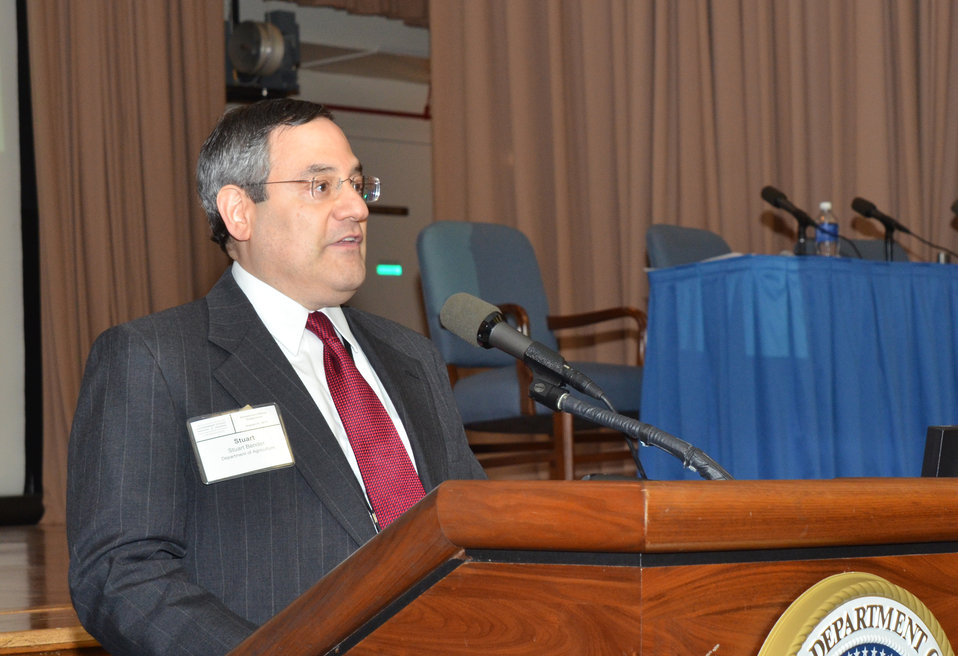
Stuart Bender makes remarks at the U.S. Office of Government Ethics training Preventing Conflict of Interest in the Executive Branch at the Jefferson Auditorium at the U.S. Department of Agriculture (USDA) in Washington, D.C. on Wednesday, Aug. 21, 2013.